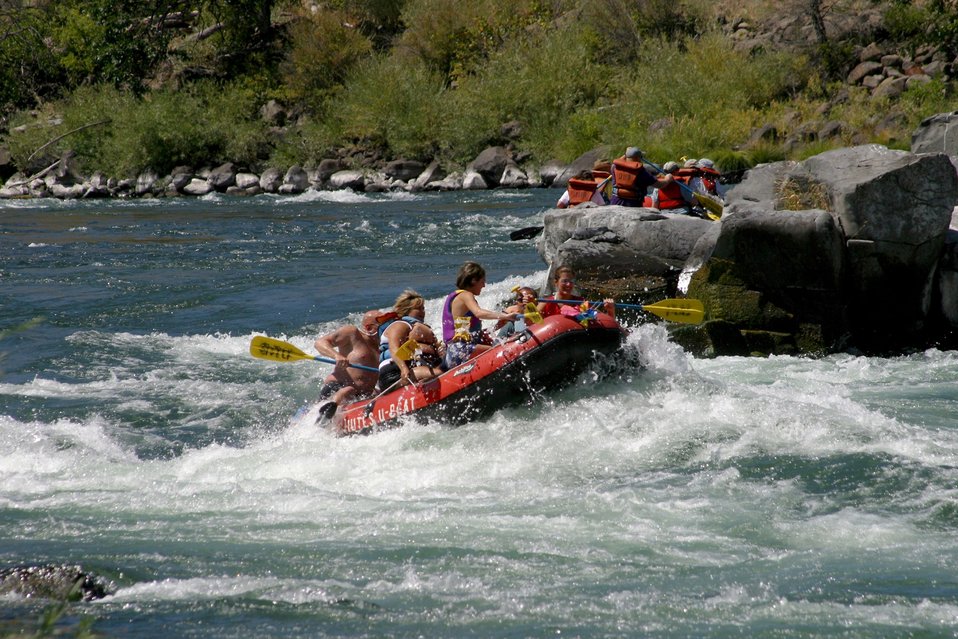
Wapinitia Rapids class III, has large roller coaster waves. 7/26/03 Pelton Dam 3600 cfs: Moody Rapids 4300 cfs.